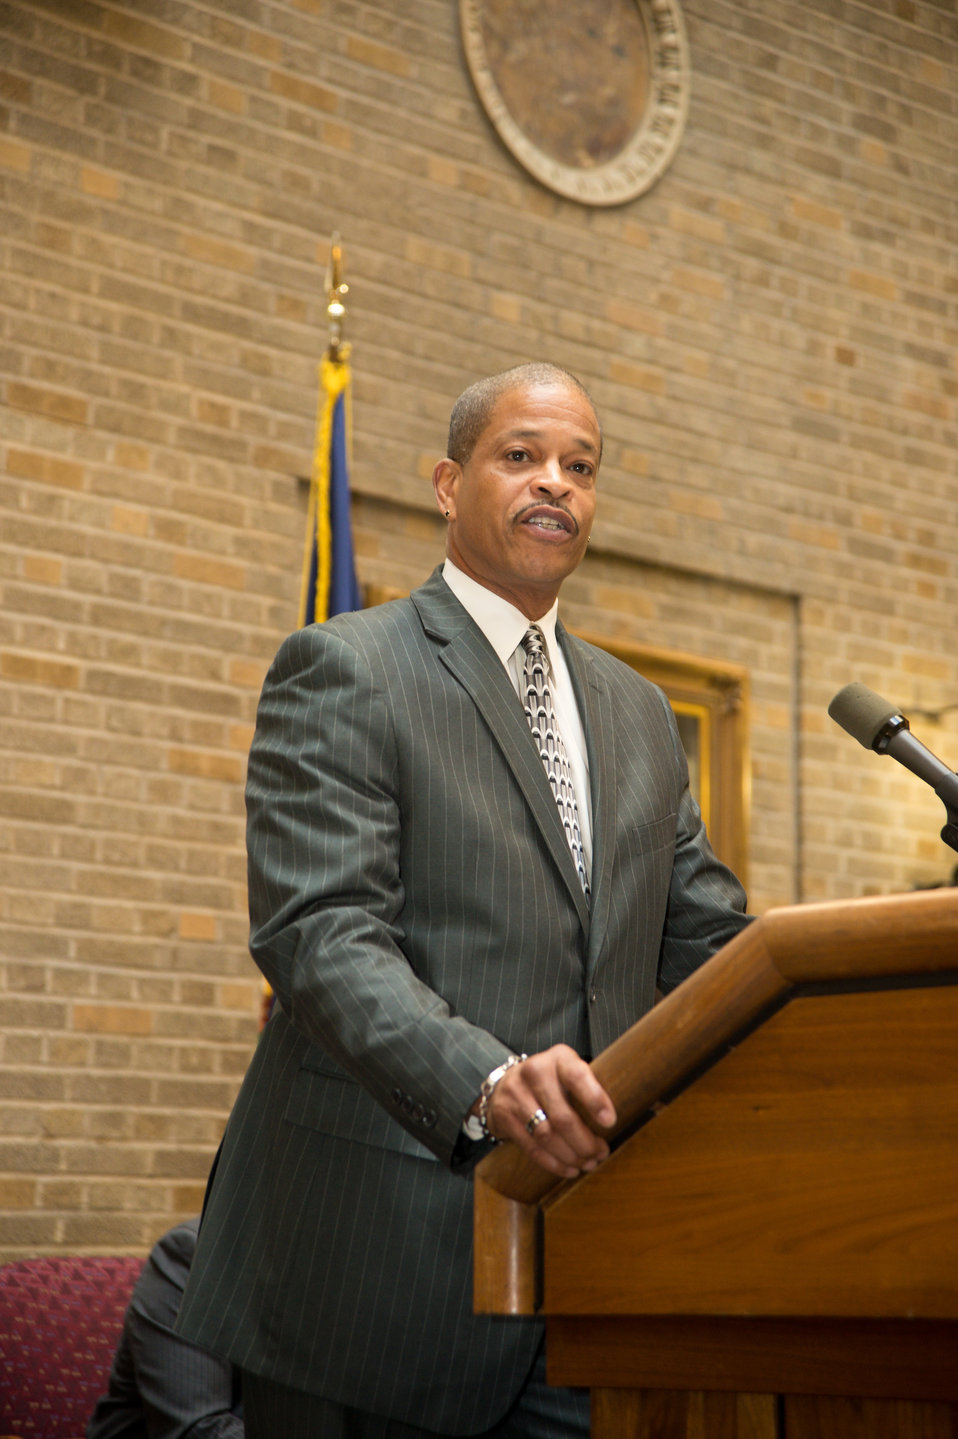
William “Billy” Milton, Jr., Chief Human Capital Officer, United States Department of Agriculture (USDA), addresses employees and partner agencies at the United States Department of Agriculture Feds Feed Families closing ceremony, on Wed., Nov. 13, 2013 in Washington, D.C. Milton provides vision and leadership to USDA-wide employee and human development programs. Federal employees nationwide stepped up the challenge of Feds Feed Families and gathered 9 million pounds of food for food banks across the nation and the National Capital Region and for families in need setting an all time record high.